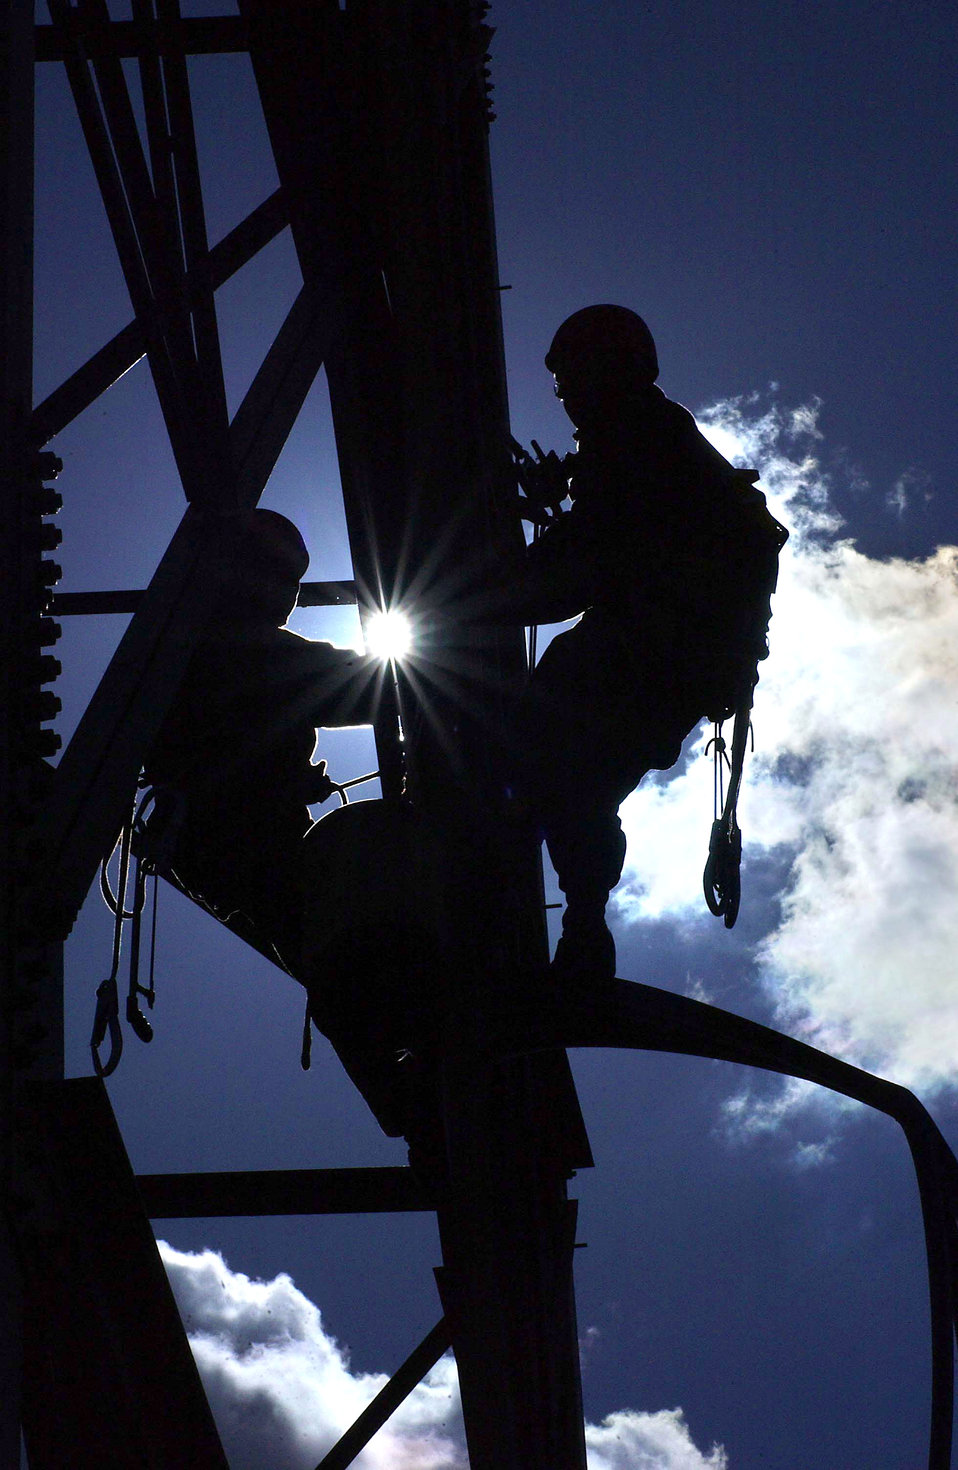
Digital European Backbone decommissioning

ROYAL AIR FORCE MILDENHALL, England -- Staff Sgts. Casey Helmer and Dustin Hemingway remove a wave guide as part of the Digital European Backbone's decommissioning. The backbone consisted of 17 sites in England and others throughout Europe forming a network of radio sites. A new system, using government-owned and -leased fiber-optic cabling technology, will allow voice, video and data transfer at higher rates. The airmen are assigned to the 1st Communications Maintenance Squadron at Kapaun Air Station, Germany.